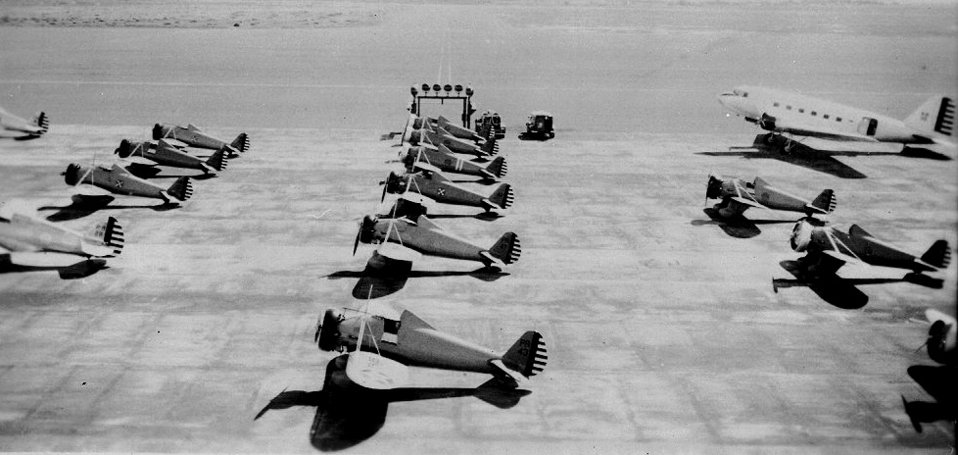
P-26s

These Boeing P-26s, known as